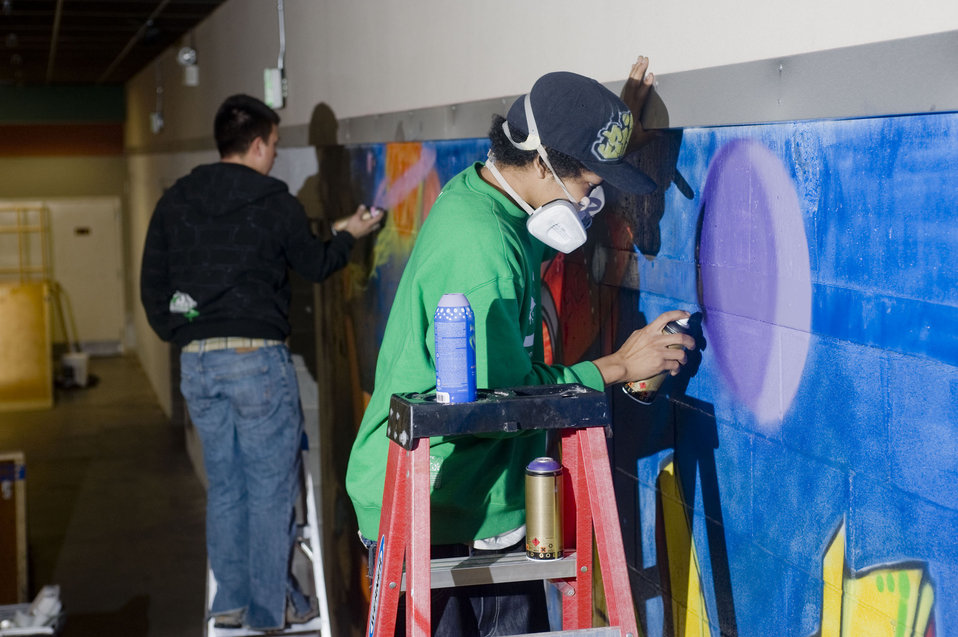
It's not graffiti, it's art

Staff Sgt. Art Delafuente and Arielo Taylor paint a wall at the indoor skate park inside the base community center April 3 at Elmendorf Air Force Base, Alaska. Sergeant Delafuente is a crew chief from 19th Aircraft Maintenance Unit. He and Mr. Taylor volunteered to decorate the skate park with graffiti.